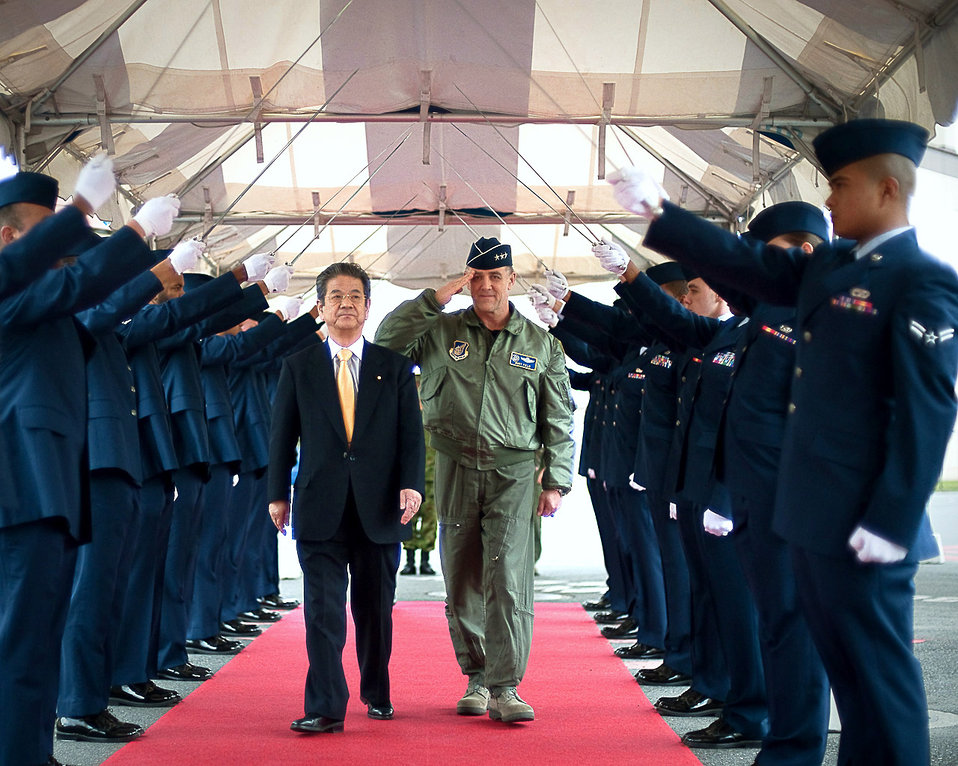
Japan MOD visits Yokota

Toshimi Kitazawa and Lt. Gen. Burton Field walk through an honor guard cordon April 23, 2011, at Yokota Air Base, Japan. Minister Kitazawa visited Yokota AB to thank U.S. service members for their efforts in support of Operation Tomodachi and to observe a bilateral demonstration of the U.S. Marine's and Japan Ground Self-Defense Force chemical response forces. Mr. Kitazawa is the Japan Minister of Defense and General Field is the U.S. Forces Japan and 5th Air Force commander.